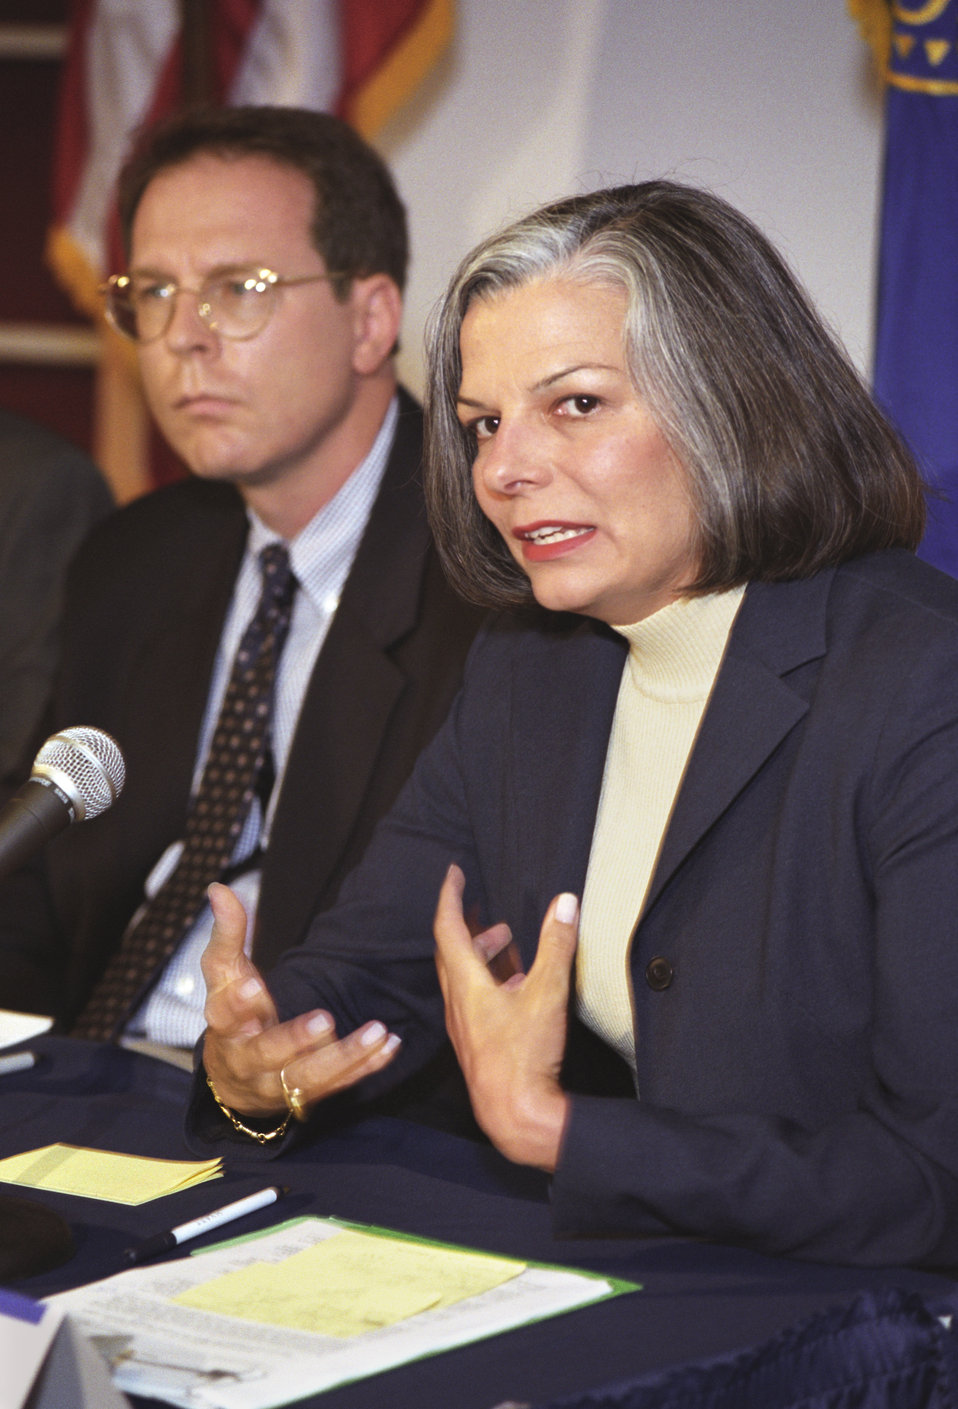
Centers for Disease Control and Prevention Bioterrorism Preparedness Press Briefing, August 27, 2002.